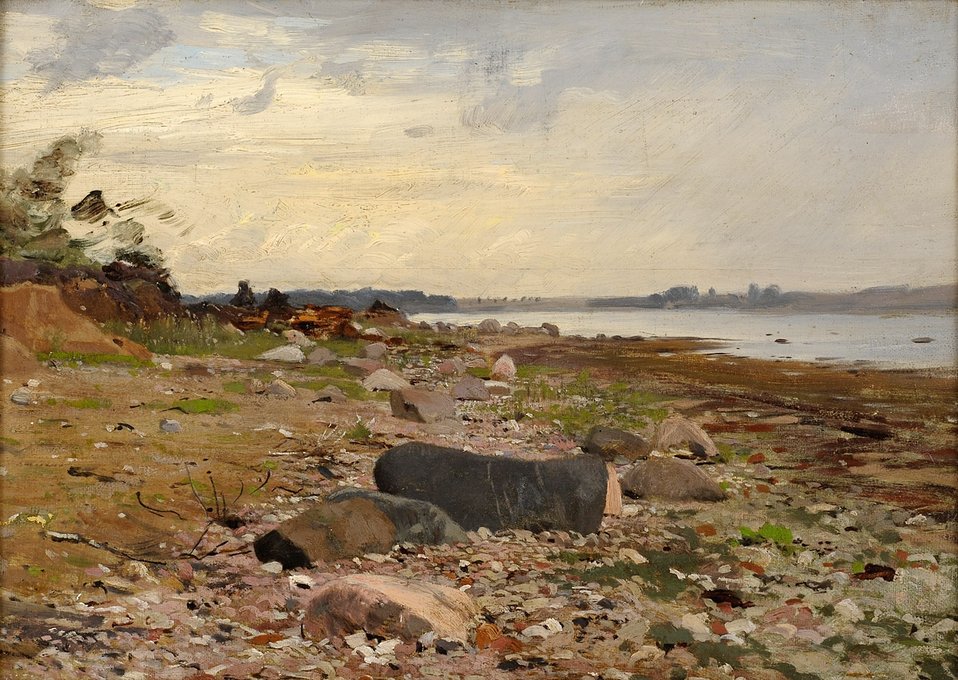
Strandszene. Rückseite mit Nachlassstempel. Öl/Malk., 30 x 40 cm